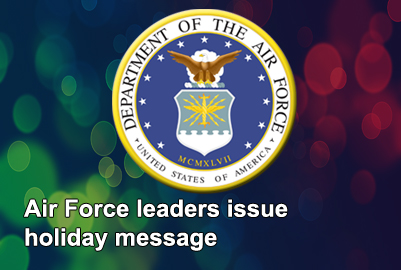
Holiday message from top three